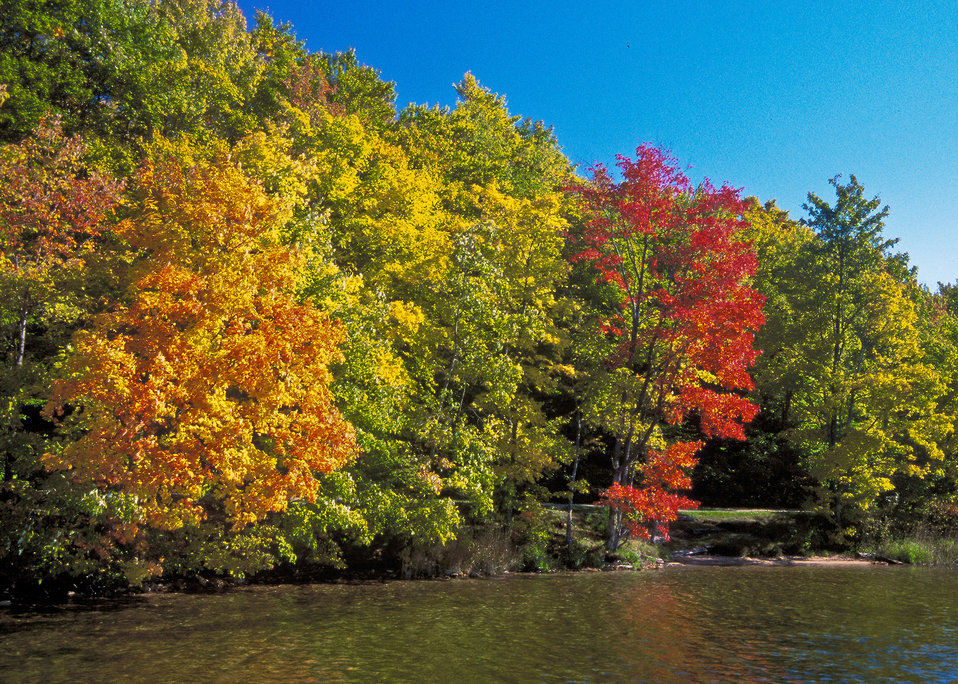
The Hiawatha National Forest on the Upper Peninsula of Michigan. North, South, East or West, the National Forests are a great natural resource to be enjoyed and offer an evolving living painting during the Fall.